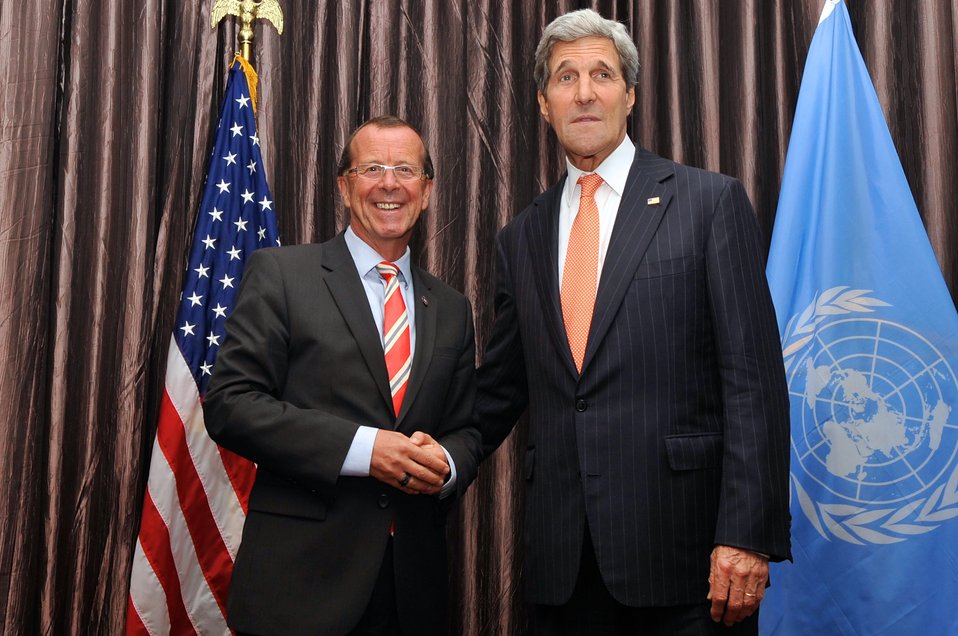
Secretary Kerry Meets With UN Special Representative Kobler in Kinshasa

U.S. Secretary of State John Kerry meets with UN Special Representative of the Secretary-General and head of the UN Organization Stabilization Mission in the DRC Martin Kobler during a visit to Kinshasa, Democratic Republic of Congo, on May 3. 2014.